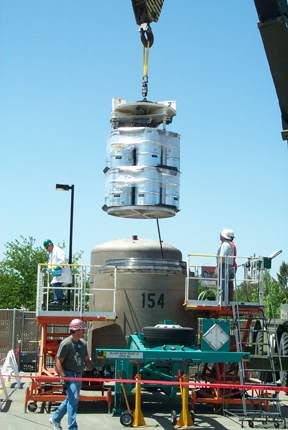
Recovery Act Funds Spur Cleanup of Additional Transuranic Waste Sites

Workers load drums of contact-handled transuranic waste into a TRUPACT-II shipping container.